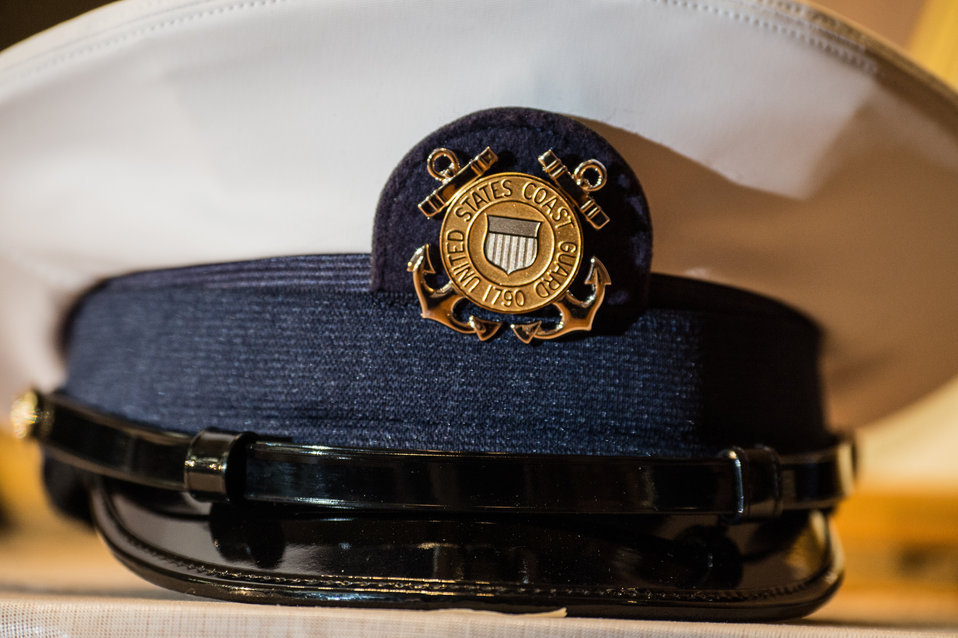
A service hat representing the U.S. Coast Guard (USCG) by Captain (retired) U.S. Army and Vietnam veteran Andrew Malloy at the Prisoner of War (POW)/Missing in Action (MIA) Honors Ceremony at the U.S. Department of Agriculture (USDA) Veterans’ Day Observance, whose theme is “VALOR, COURAGE, SACRIFICE – HONORING ALL WHO SERVED,” in Washington, DC, on Wednesday, November 20, 2013.